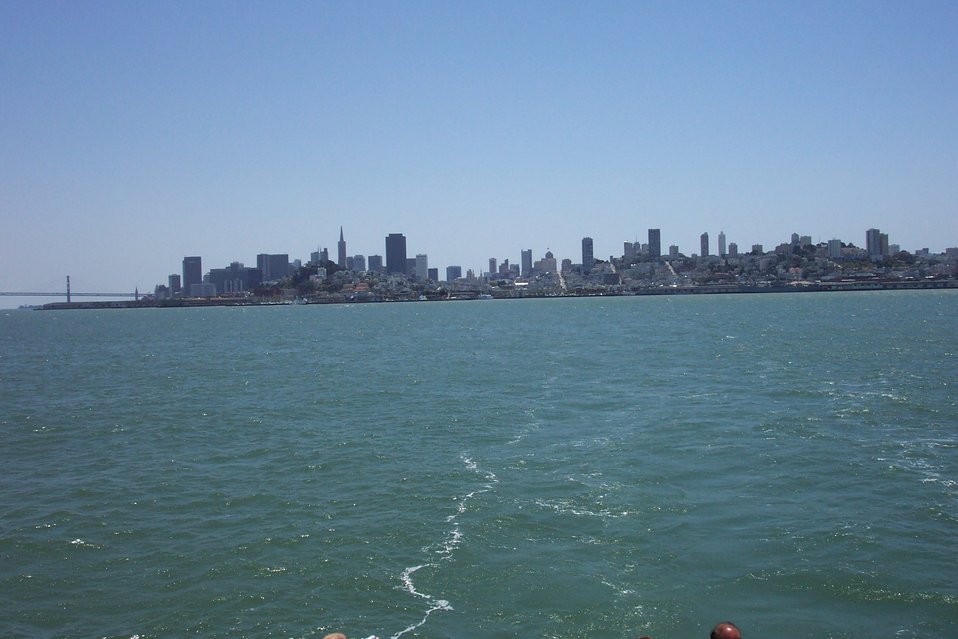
Part of San Francisco skyline as seen from tour boat on the way to Alcatraz.